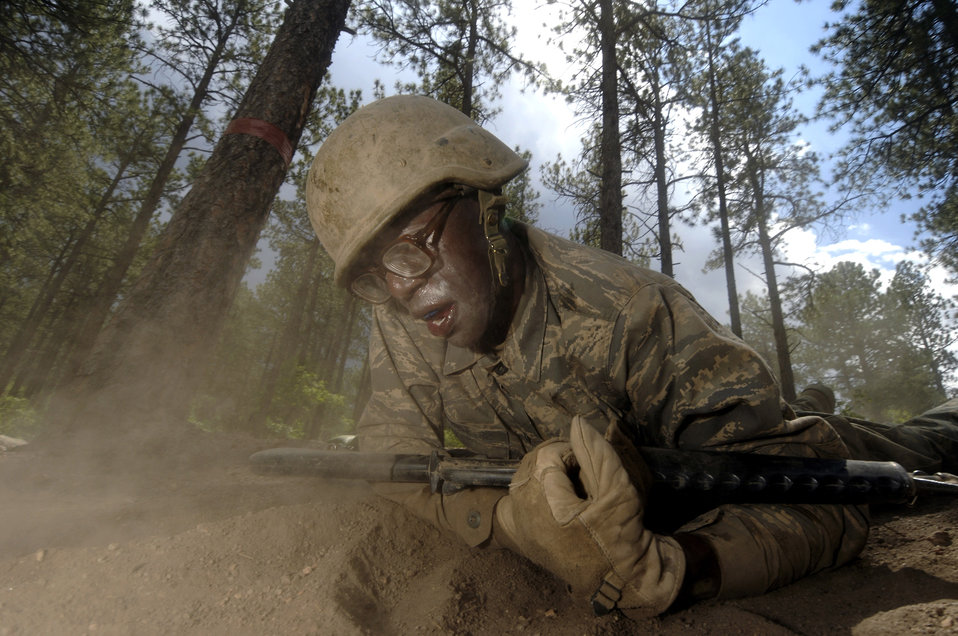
Low crawl

U.S. Air Force Academy basic cadet Michael Provost low crawls down a section of the assault course during basic cadet training in the Jacks Valley training area July 25.